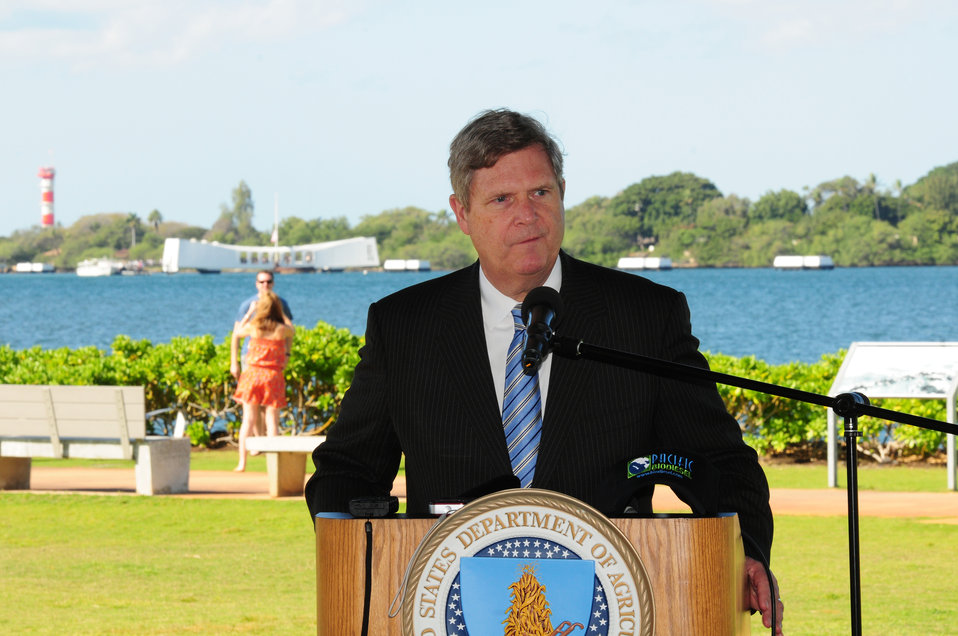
Agriculture Secretary Tom Vilsack highlights the Obama Administration's commitment to renewable energy at the.World War II Valor in the Pacific National Monument's Pearl Harbor Visitor Center. Pearl Harbor naval base was the first Hawaii military marine fleet to use biodiesel, replacing the Department of Navy-operated tour boats that shuttled visitors to and from the USS Arizona Memorial with five new boats capable of running on 100% biodiesel. Near Honolulu, HI, on Tuesday, January 10, 2012.